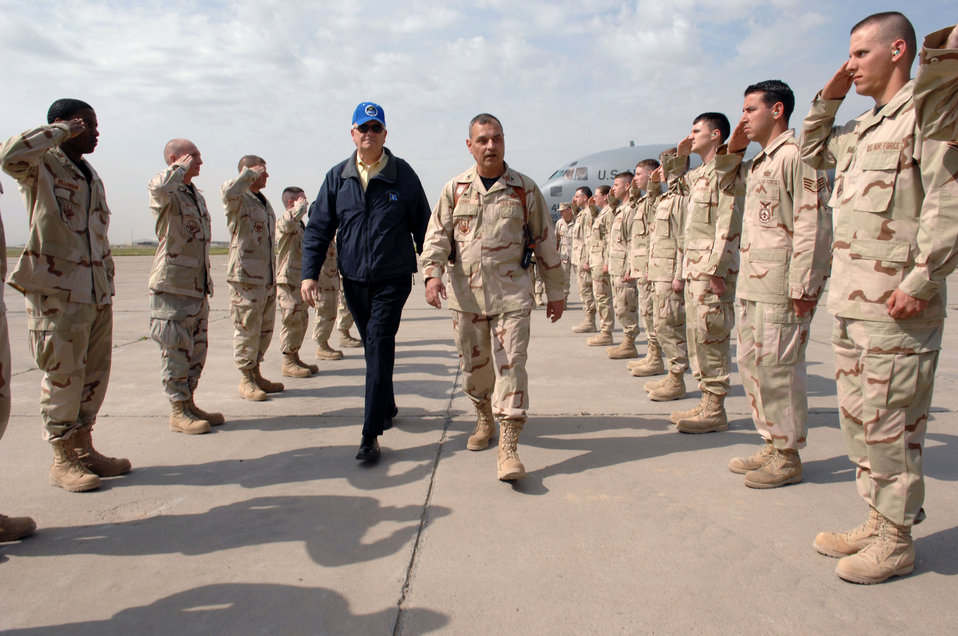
SECAF visits Airmen at Kirkuk

Secretary of the Air Force Michael W. Wynne meets with Col. Robert Leeker, the 506th Air Expeditionary Group commander, March 28 at Kirkuk Regional Air Base in Iraq. Airmen of the 506th Air Expeditionary Group salute the visiting SECAF.